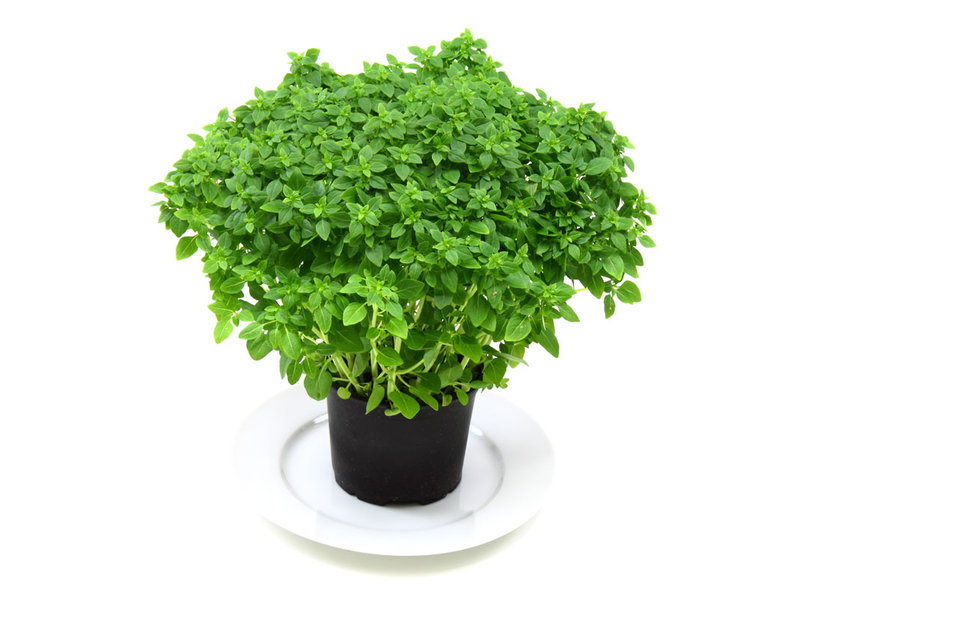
Fresh basil

Young basil isolated on white background.